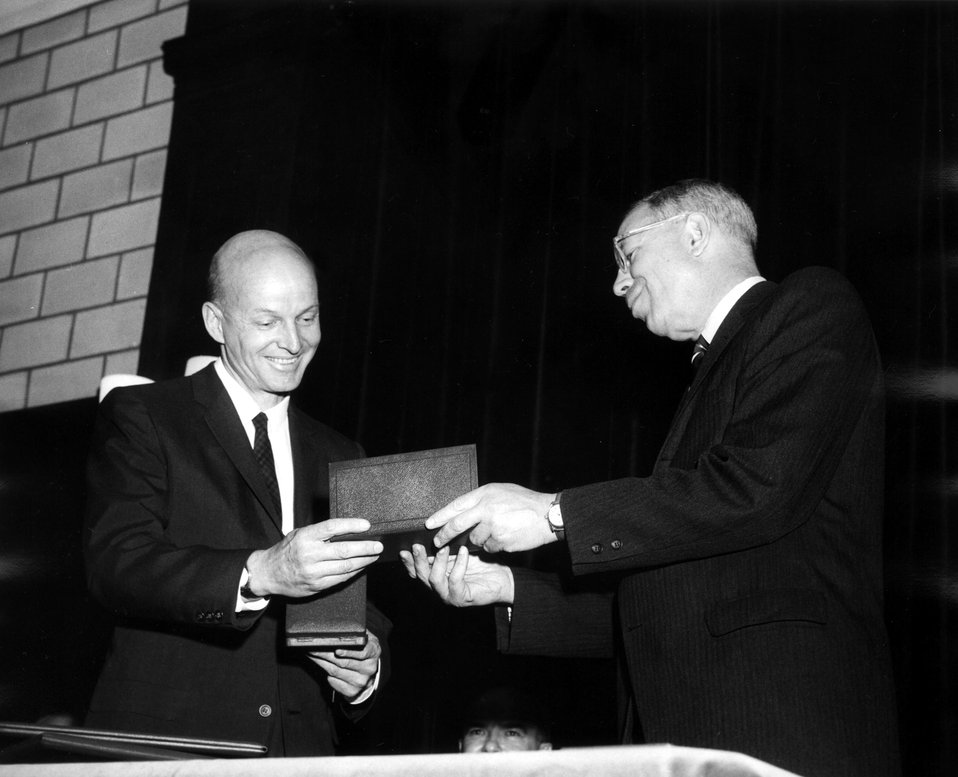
Lawrence Award, 1966.